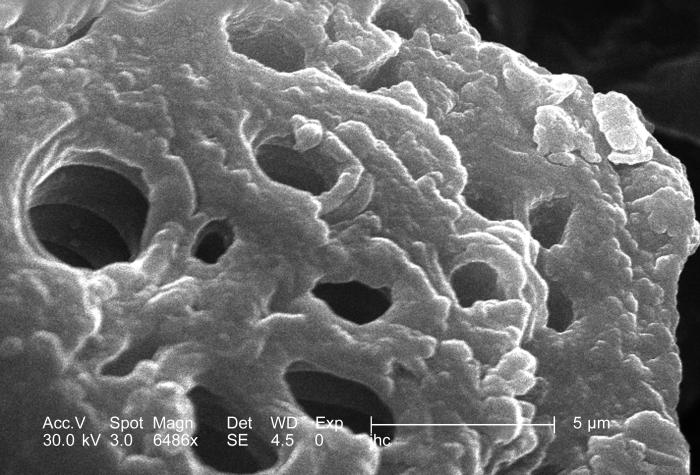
Under a high magnification of 6486x, this 2006 scanning electron micrograph (SEM) depicted details of the morphologic surface characteristics of a "dandelion clock", from a Common Dandelion, Taraxacum officinale plant. The "clock" is the filamentous "puffball" of seeds arranged so as to be easily dispersed by the wind, or the breath of a curious child.Highlighted in this field of view was the remnant of a seed attachment, visible as a small cavitated nub. It is from these nub-like points that the "parachute"-equipped seeds detach, and are blown away, sometime over a distance of miles. Note that this is the second in a series of PHIL images, 8791-8796, in which the magnification is increased, thereby, providing greater and greater morphologic detail of the point of the developing seed attachment.